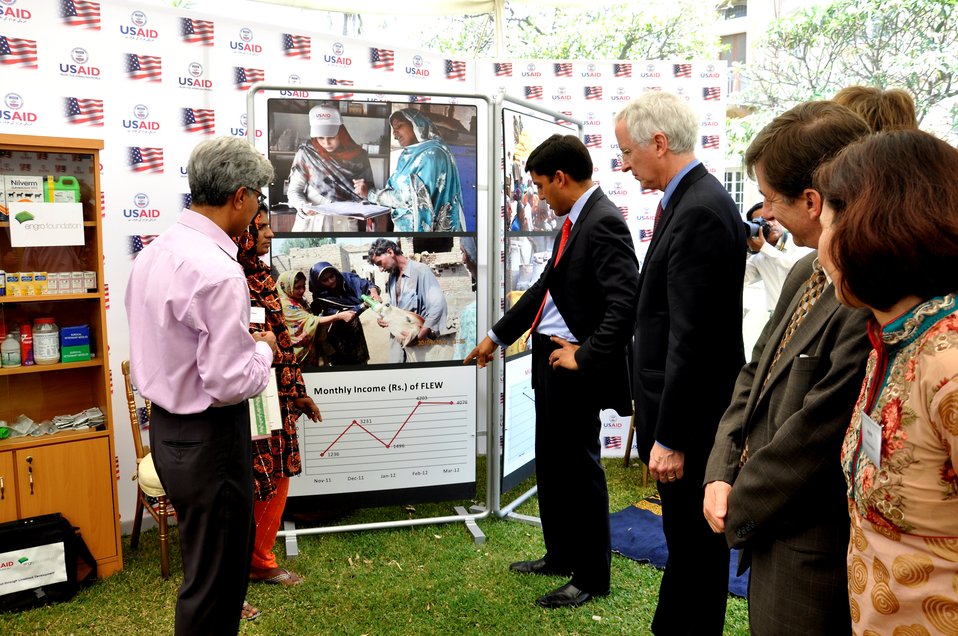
Dr. Shah while interacting with the Entrepreneurs Dairy project benificiaries